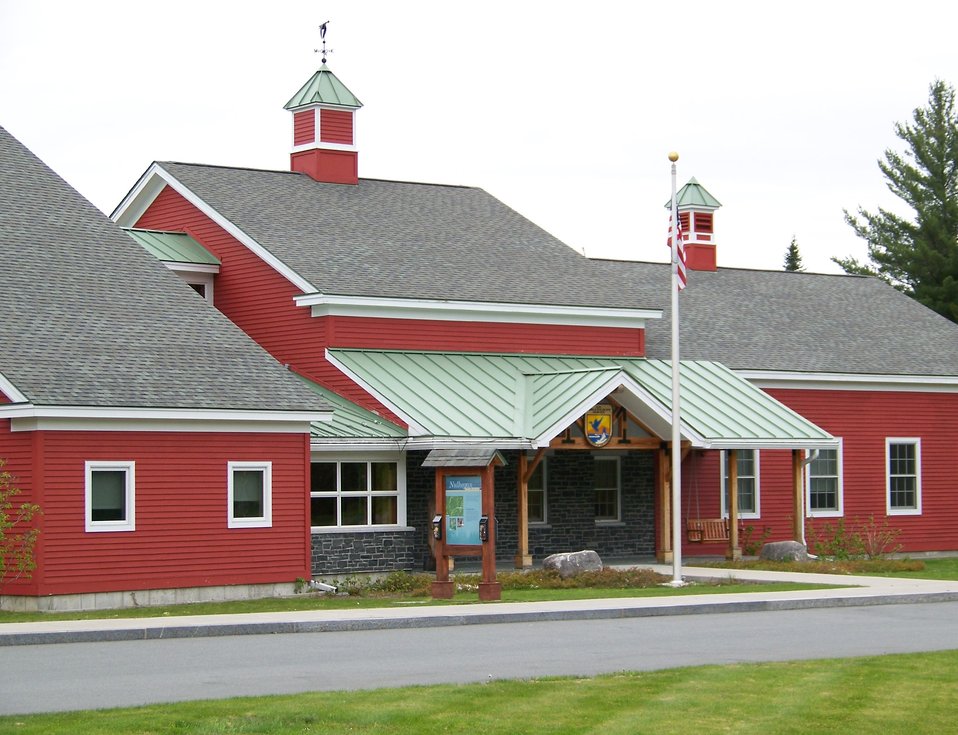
Nulhegan Basin Division, Silvio O. Conte National Wildlife Refuge.